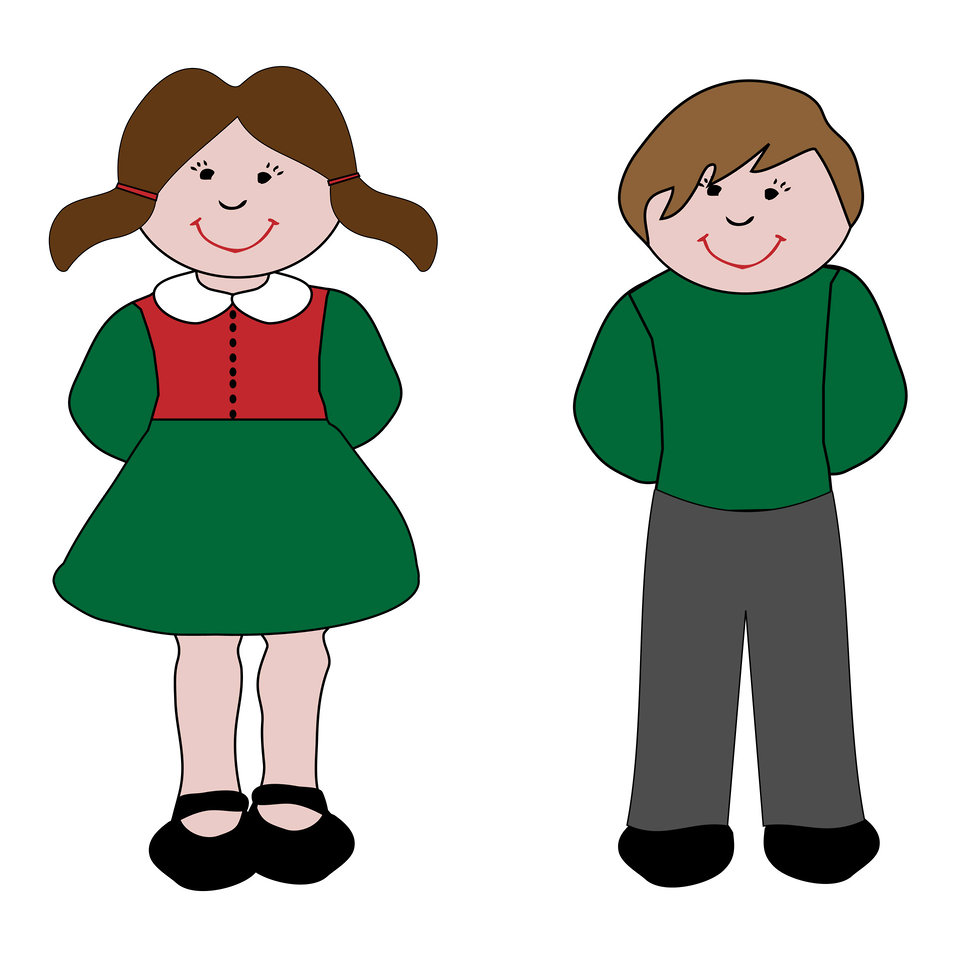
Children

Kids boy and girl clip-art.